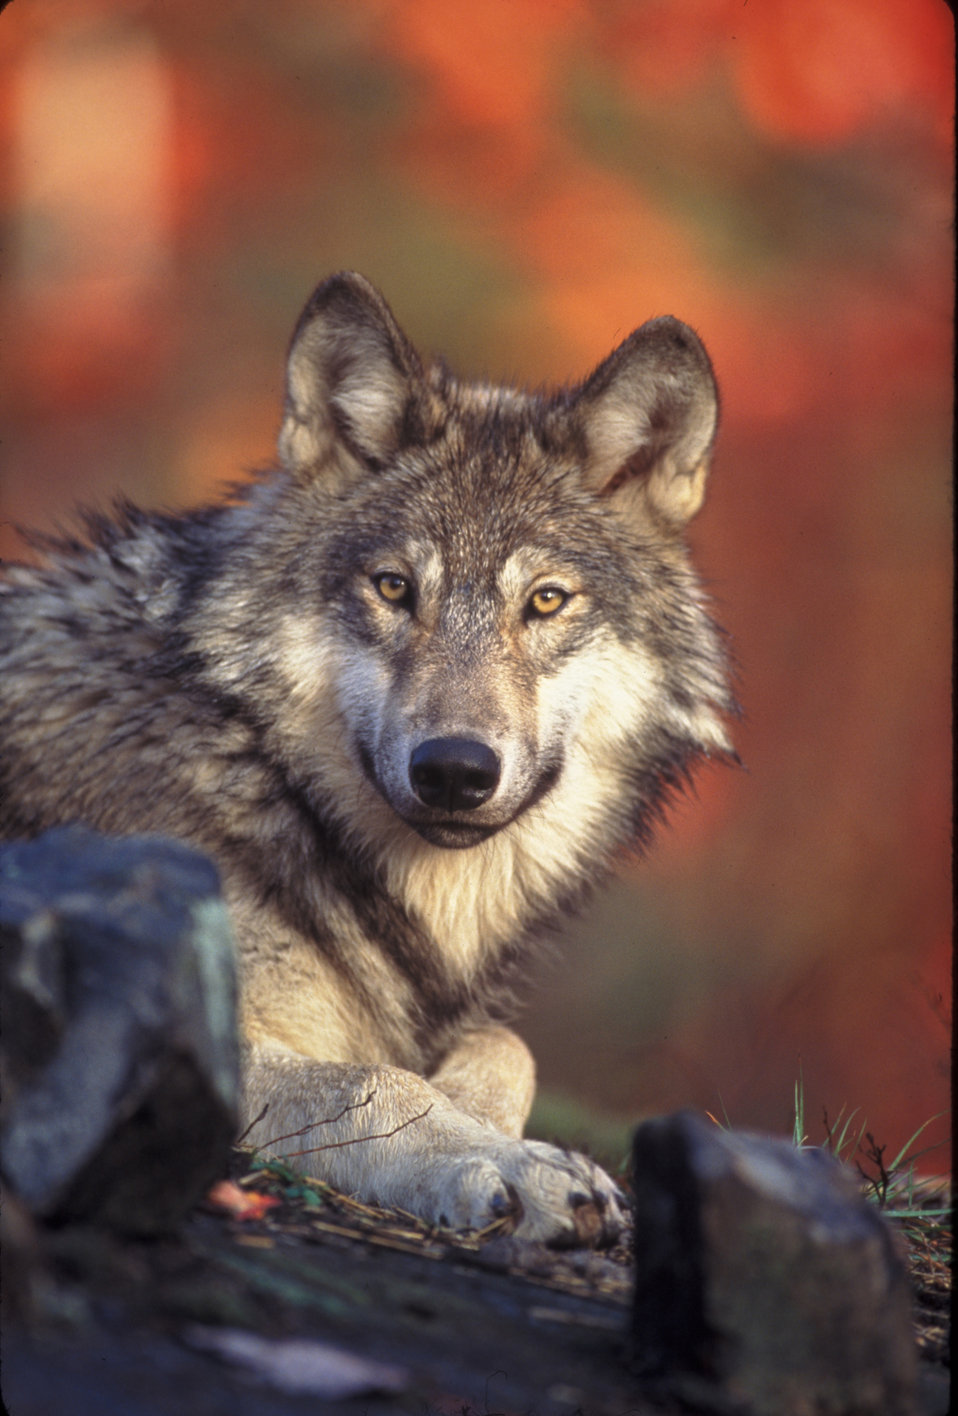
Gray Wolf